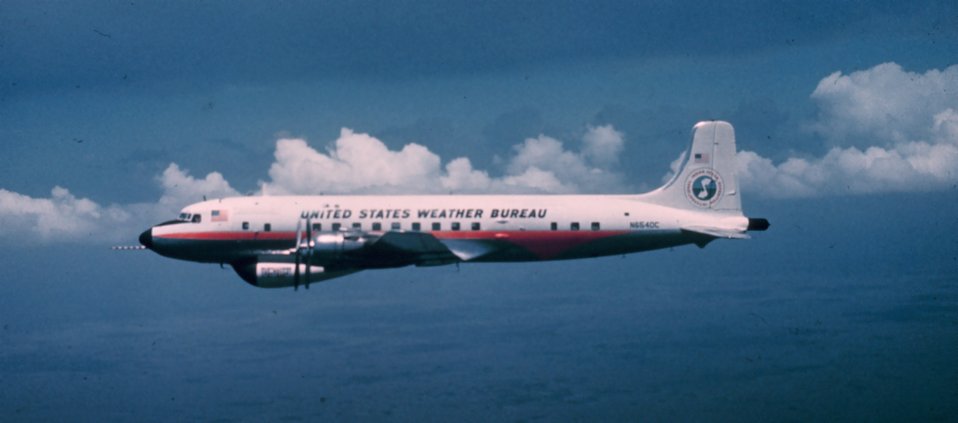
Weather Bureau DC-6 N6540C in flight